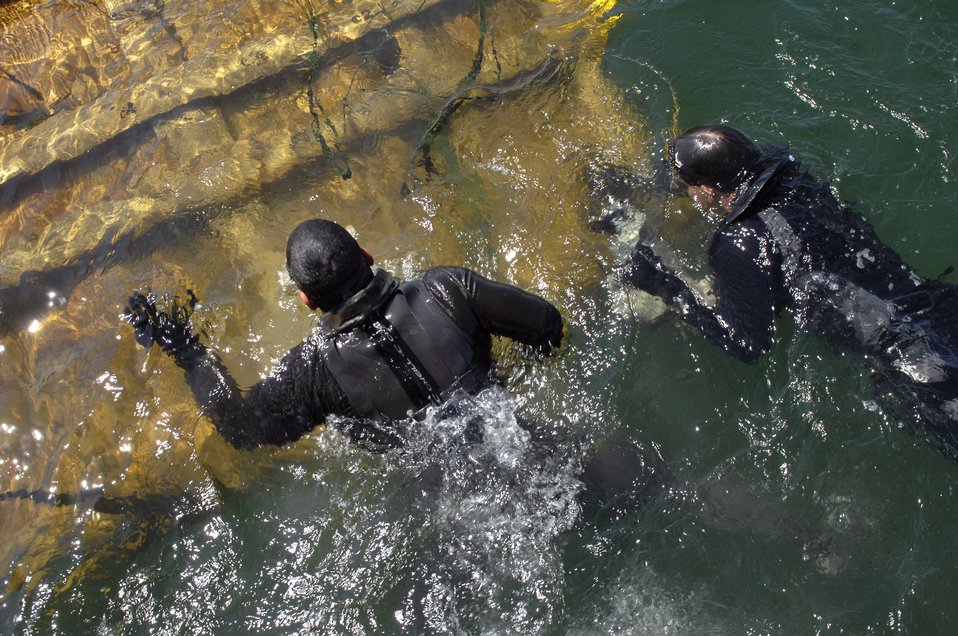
Commando Angel preps pararescuemen

Pararescuemen from the 38th Rescue Squadron of Moody Air Force Base, Ga., cut away the pallet from their raft after being dropped by parachute March 22 into the Gulf of Mexico . The scenario was part of Moody AFB's operational readiness exercise, Commando Angel.